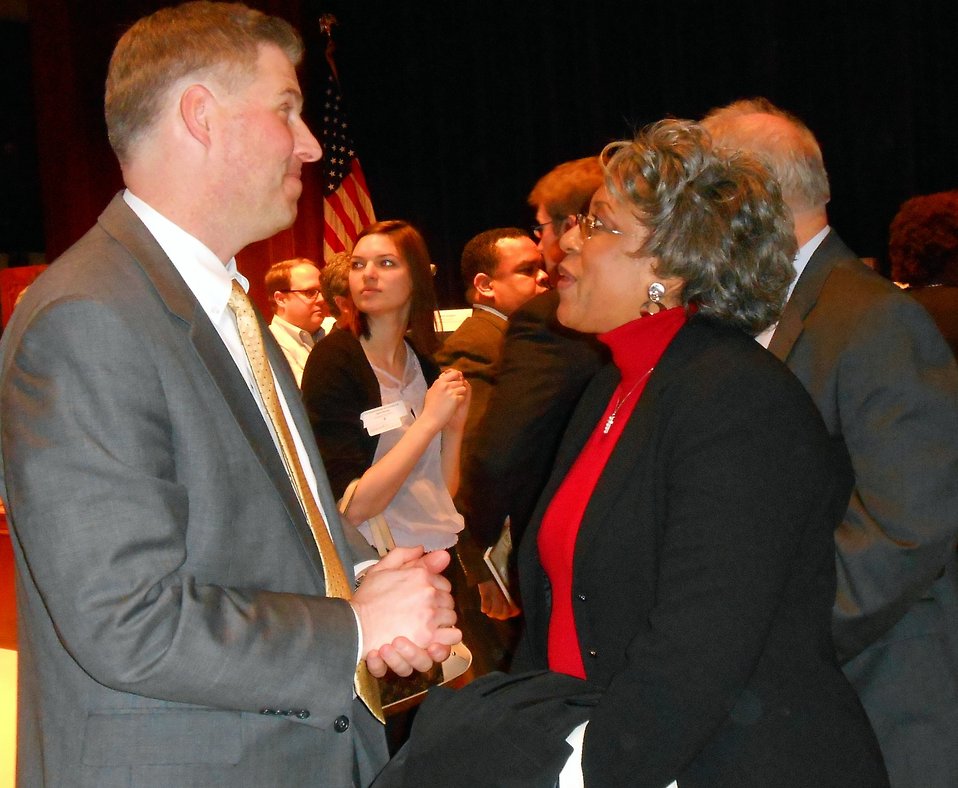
Department of Commerce 2013 Presidential Inauguration Open House Panel Discussion

NIST Director Dr. Patrick Gallagher talks with members of the audience at the conclusion of the Department of Commerce 2013 Presidential Inauguration Open House Panel Discussion “Technology, Innovation and Job Creation”.

Credit: NIST/Allan Eustis

Event: Department of Commerce 2013 Presidential Inauguration Open House: Panel Discussions held at the Herbert C Hoover Auditorium in Washington DC.